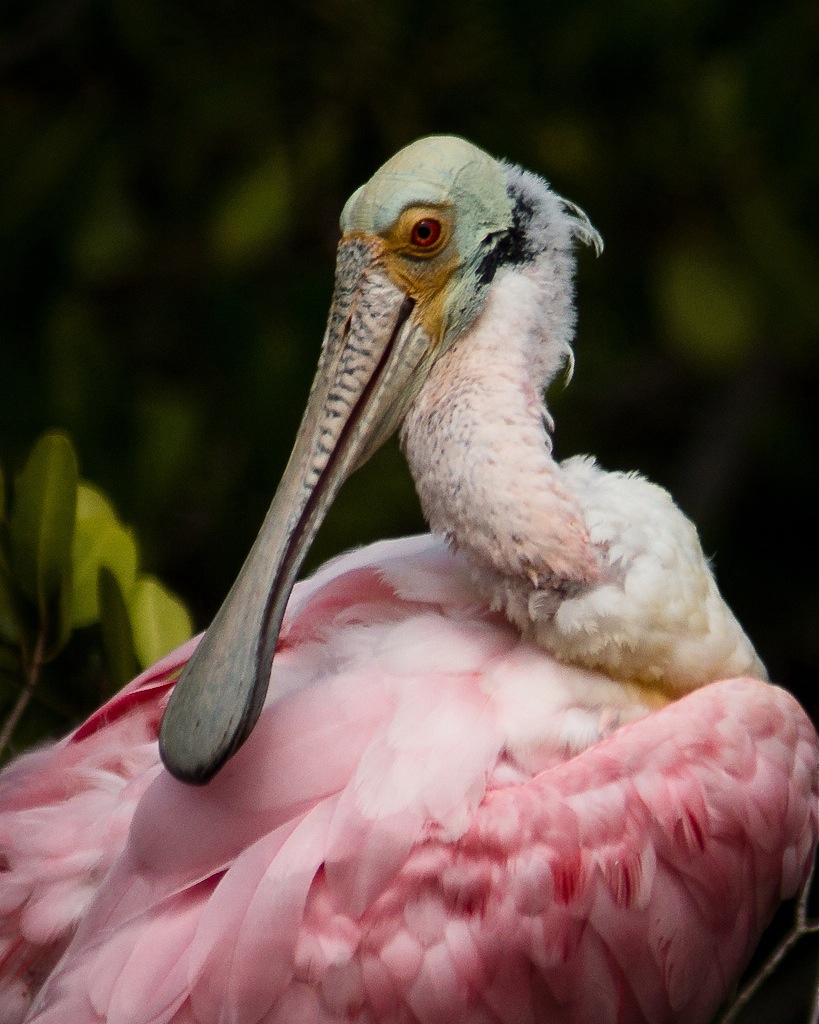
green and copper faces...

...combined with extra-intense feather colors are signs that roseate spoonbills are breeding.
This Feb. 18, 2012 photo is from j.N. Ding Darling National Wildlife Refuge in FL.